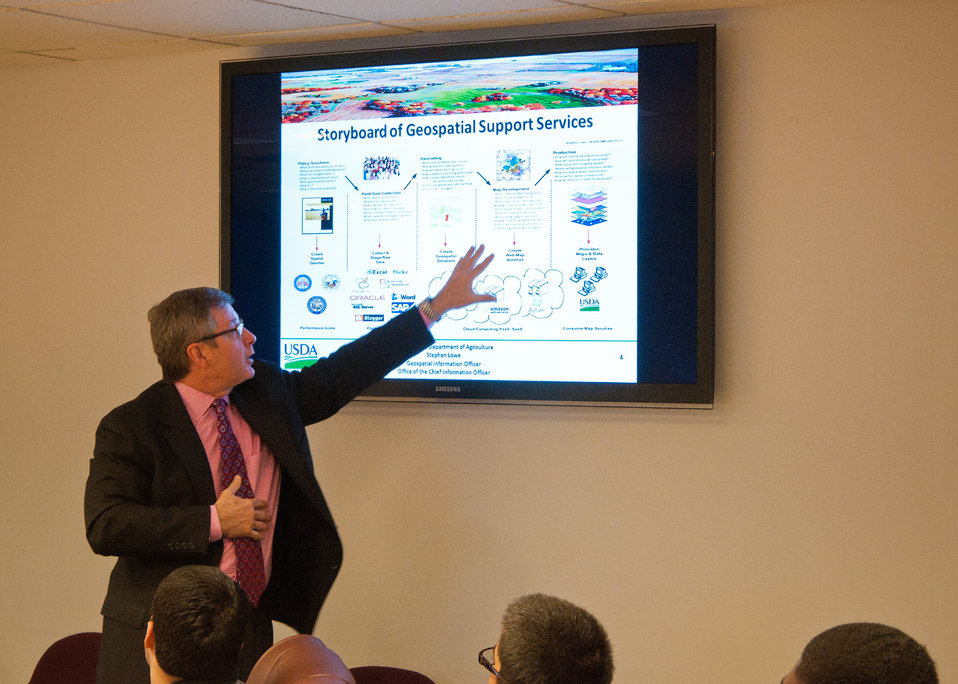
Stephen Lowe explains Geospatial Support Services to students from Edison Academy in Fairfax, VA during the annual U.S. Department of Agriculture’s (USDA) Information Technology (IT) Job Shadow Day held by the USDA Office of the Chief Information Officer (OCIO) to introduce local high school students to careers in information technology in Washington, D.C. on Tuesday, Apr. 2, 2013.